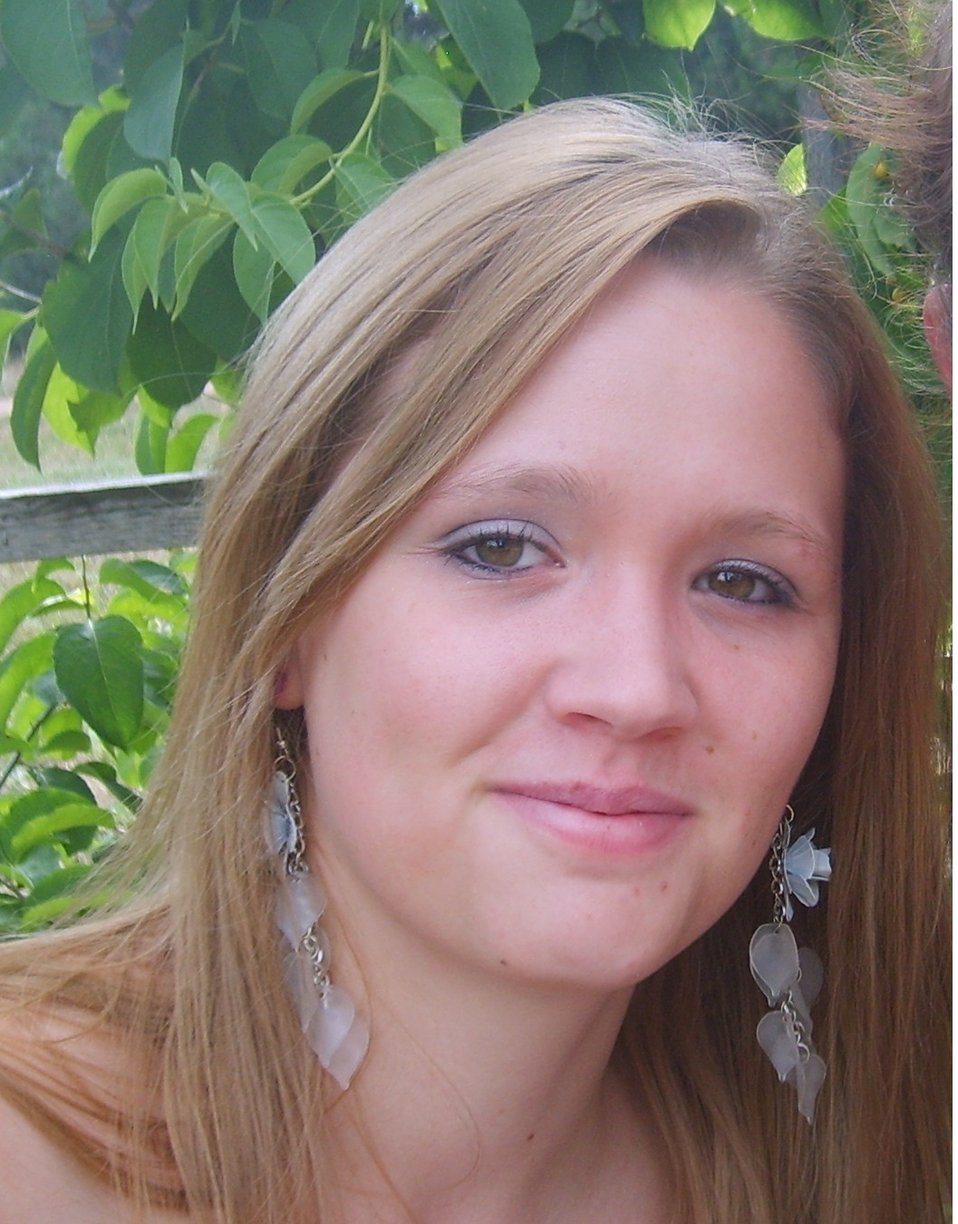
Julia Pendergrass

FWS Wilderness Fellow Julia Pendergrass